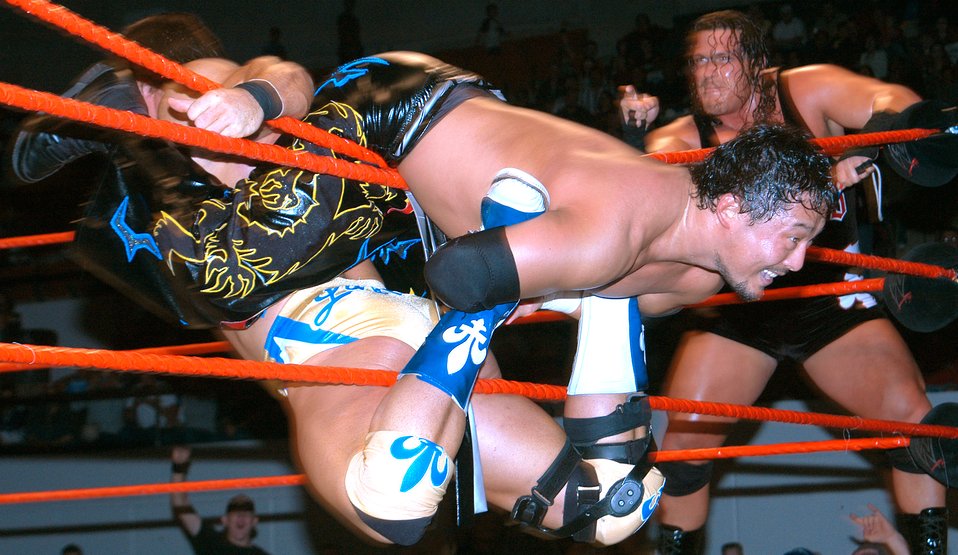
Professional wrestlers thank Dyess Airmen for service

ABILENE, Texas -- World Wrestling Entertainment professional wrestler Tajiri performs his signature move on his opponent, while his tag team partner Rhyno roots him on. Several Dyess Airmen who recently returned from deployments were selected to meet with the wrestlers here Jan. 21.